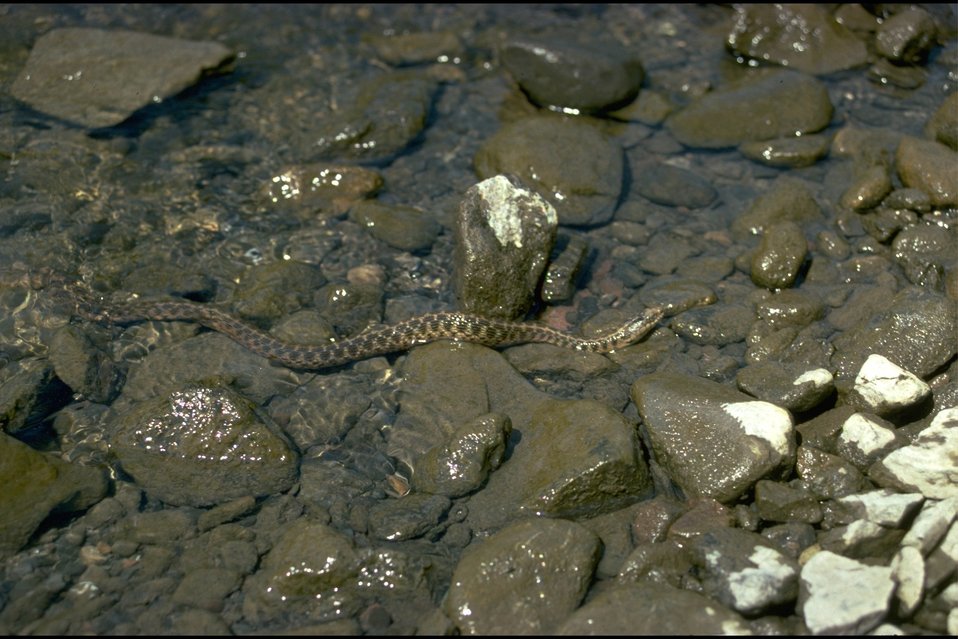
Rogue River - Water Snake.